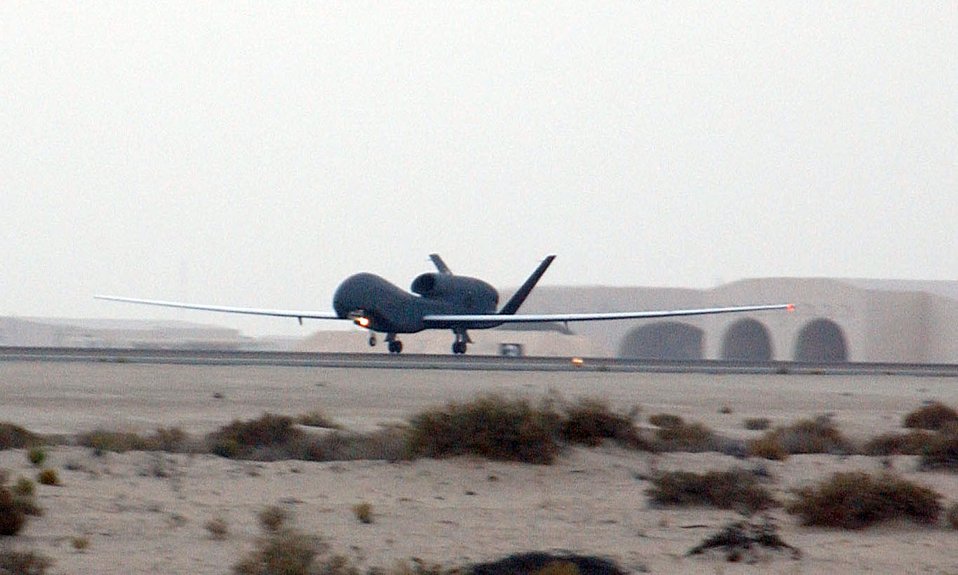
Global Hawk arrives in Southwest Asia

SOUTHWEST ASIA (AFPN) -- A Global Hawk taxis down the runway after landing at a desert base. The unmanned aerial vehicle is the Air Force's second deployed production Global Hawk. The two UAVs are the first production models deployed. Previous Global Hawks were prototypes or test models.